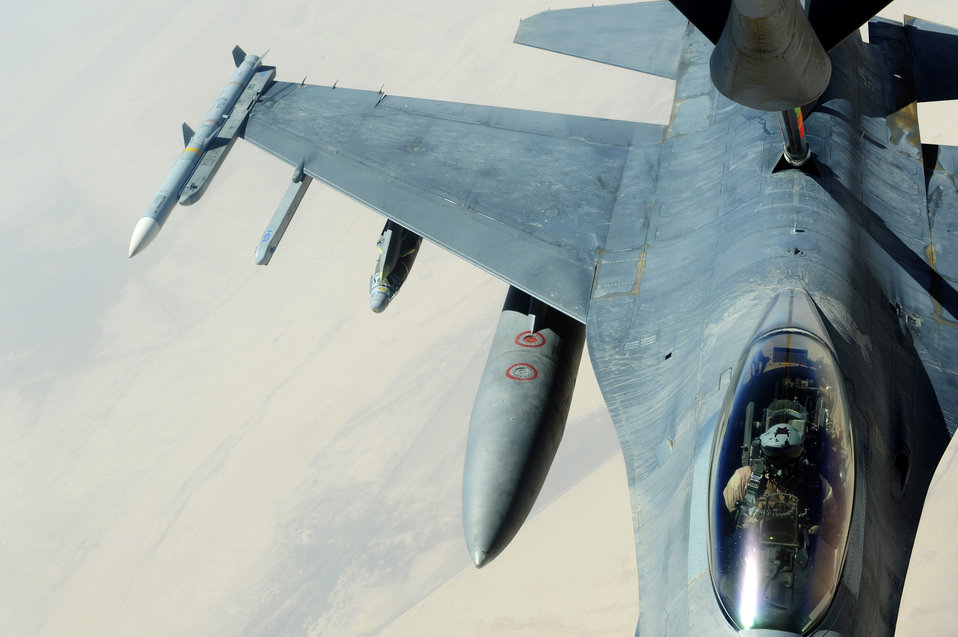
Refueling operations over Iraq

A KC-135 Stratotanker from the 340th Expeditionary Air Refueling Squadron refuels an F-16CJ Fighting Falcon July 28 over Iraq in support of Operation Iraqi Freedom.